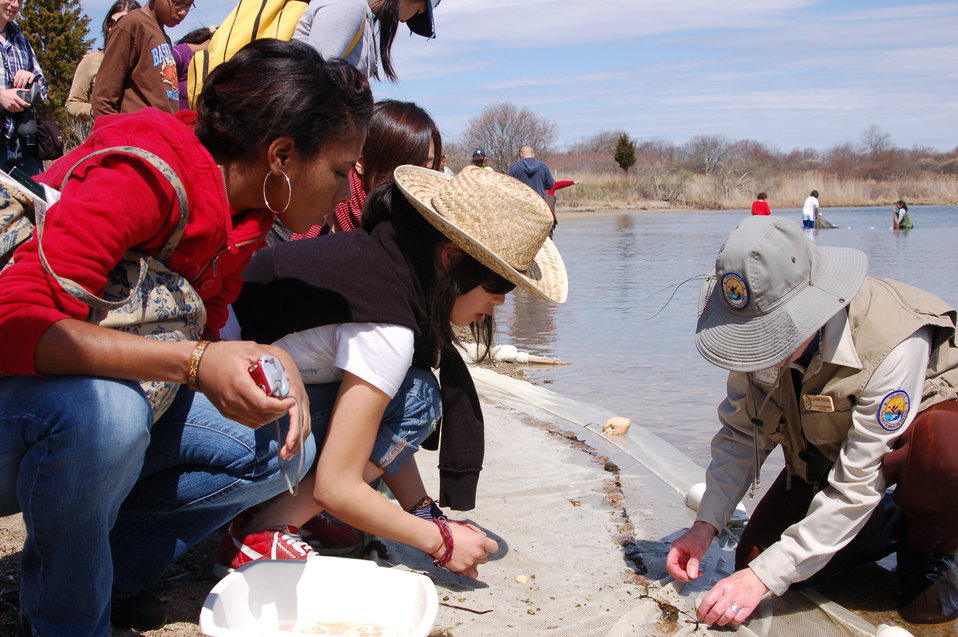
Environmental education

Ninigret National Wildlife Refuge, RI.